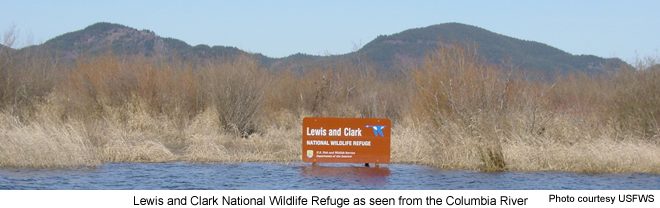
View from the Columbia River onto Lewis and Clark NWR

Lewis and Clark NWR includes approximately 20 islands stretching over 27 miles of the Columbia River.